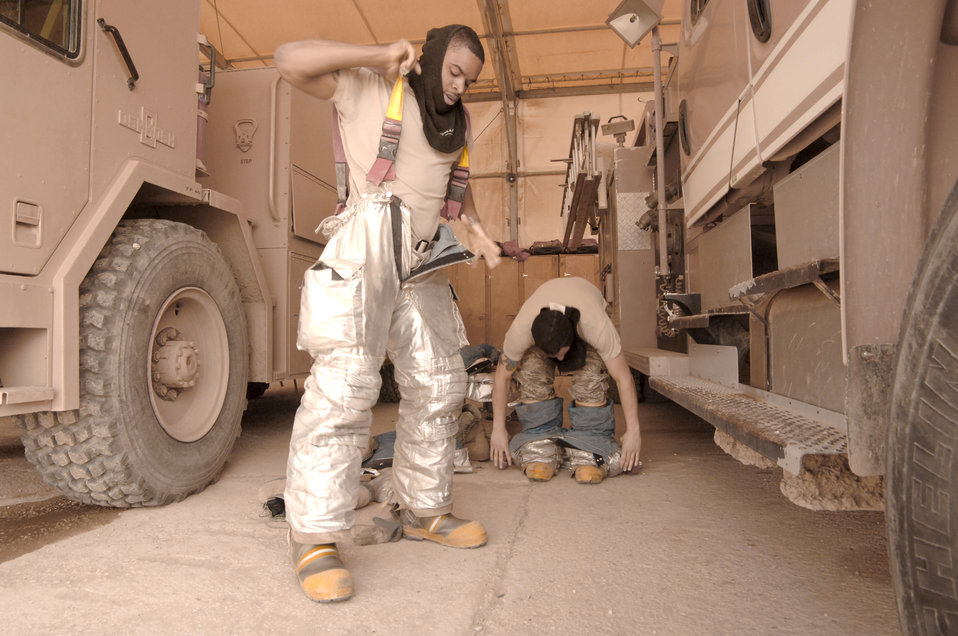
Air Force firefighters don their gear Feb. 26, 2011, at the fire house on Ali Air Base, Iraq.